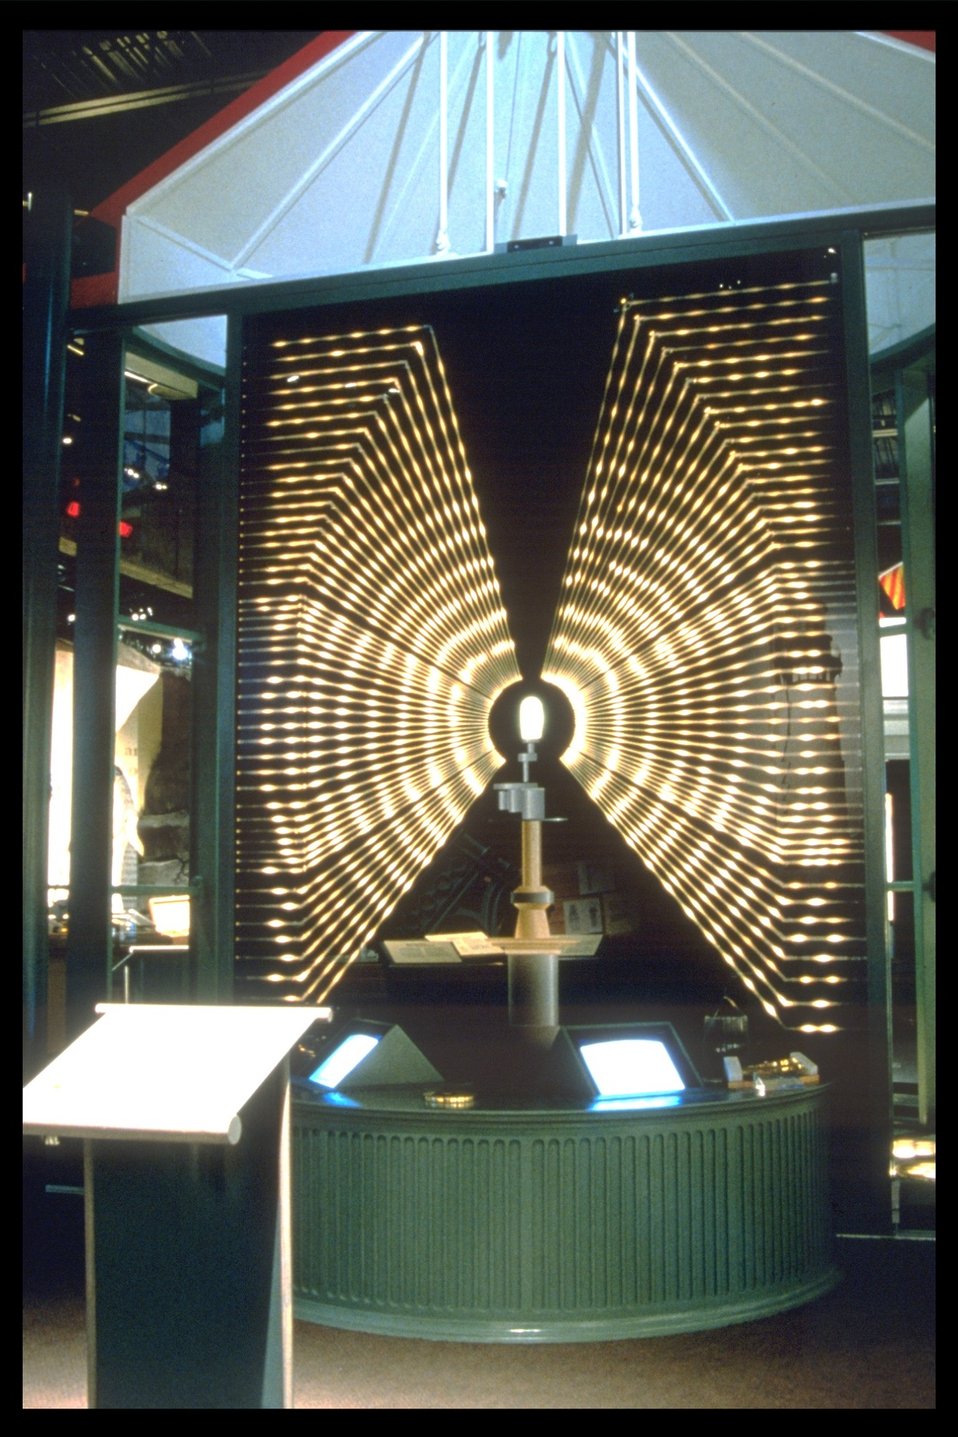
Fresnel interpretive display in the center of the Yaquina Head lighthouse.